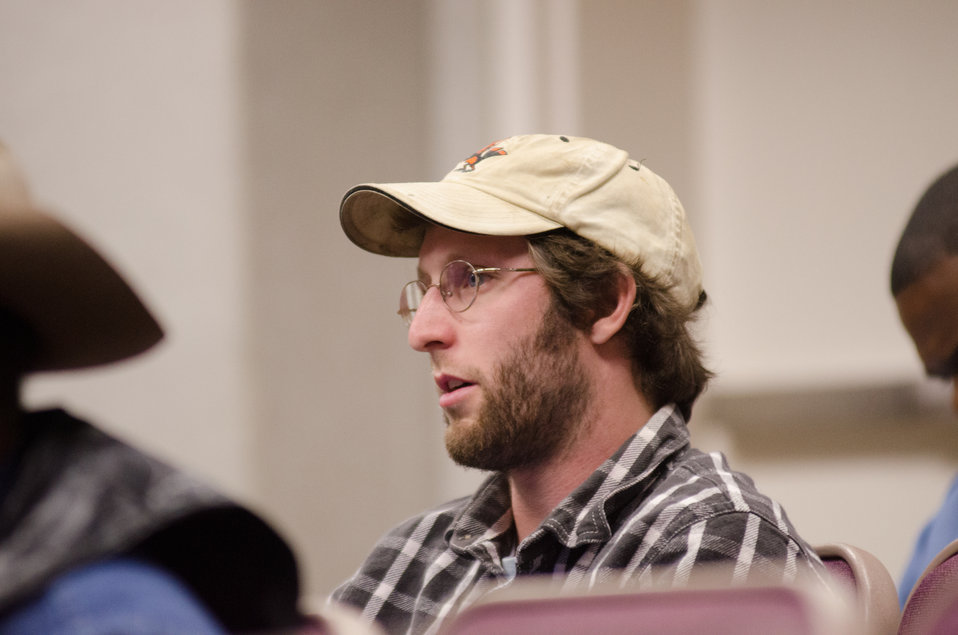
Farmers listened, questioned, took notes and gained a better understanding of resources available to them, at the “Virginia State University (VSU), U.S. Department of Agriculture (USDA) and Virginia Farmers Working Together” outreach workshop in the VSU, L. Douglas Wilder building on Thursday, March 7, 2013, in Petersburg, VA. Farmers shared and learned new ways to produce more and conduct better practices and planning of their family agriculture businesses.